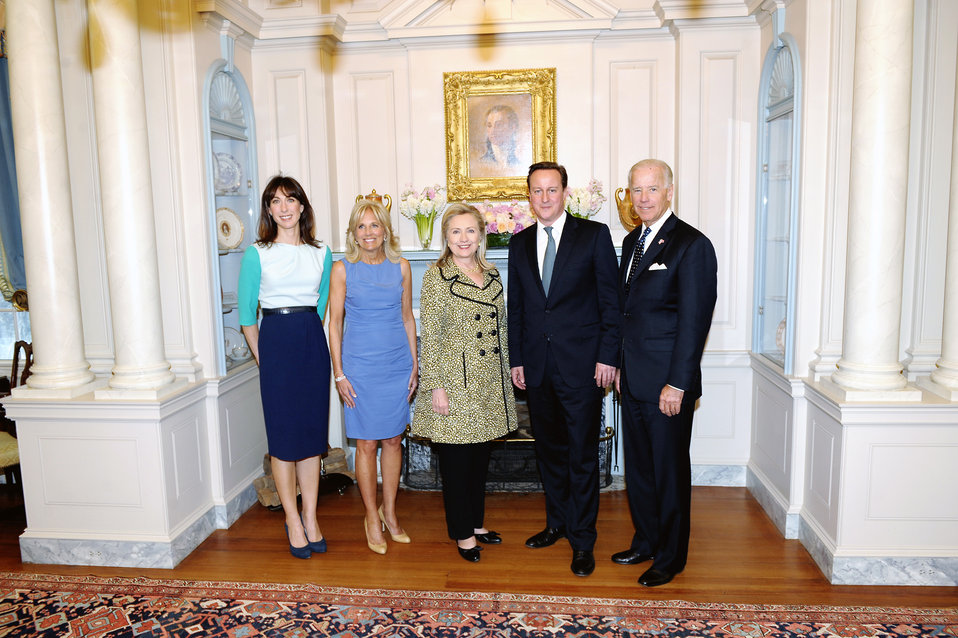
Secretary Clinton, Vice President Biden, UK Prime Minister Cameron, Dr. Biden, and Mrs. Brown Pose for a Photo

U.S. Secretary of State Hillary Rodham Clinton, center; poses for a photo with U.S. Vice President Joseph Biden, right; UK Prime Minister David Cameron, second from right; Dr. Jill Biden; second from left; and Samantha Brown, left; at the U.S. Department of State in Washington, D.C., on March 14, 2012.